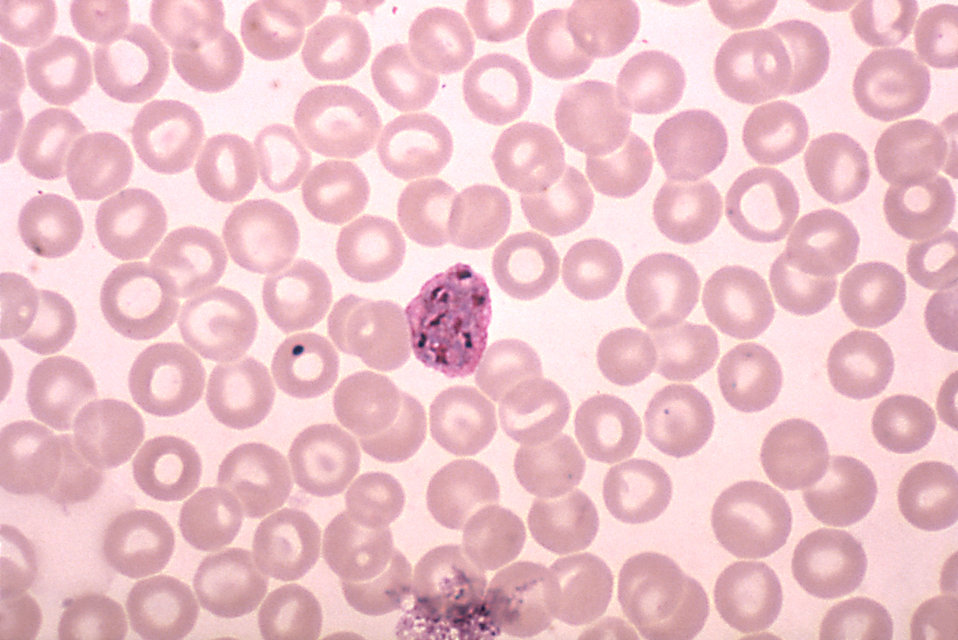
This thin film micrograph depicts an immature P. vivax schizont with 8 chromatin masses, using Giemsa stain; Mag. 1000X.